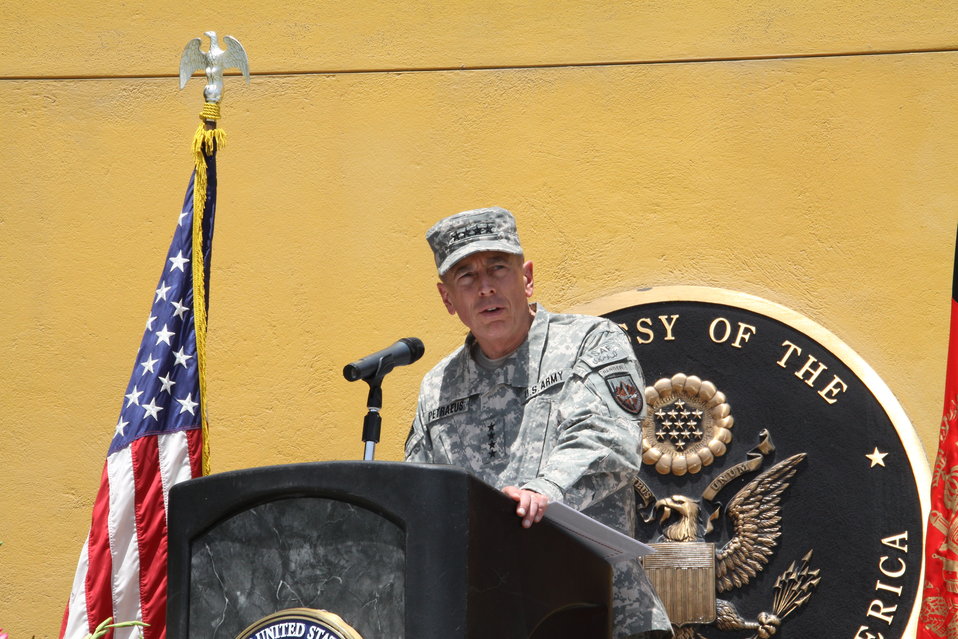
Kabul Official July 4th Celebration